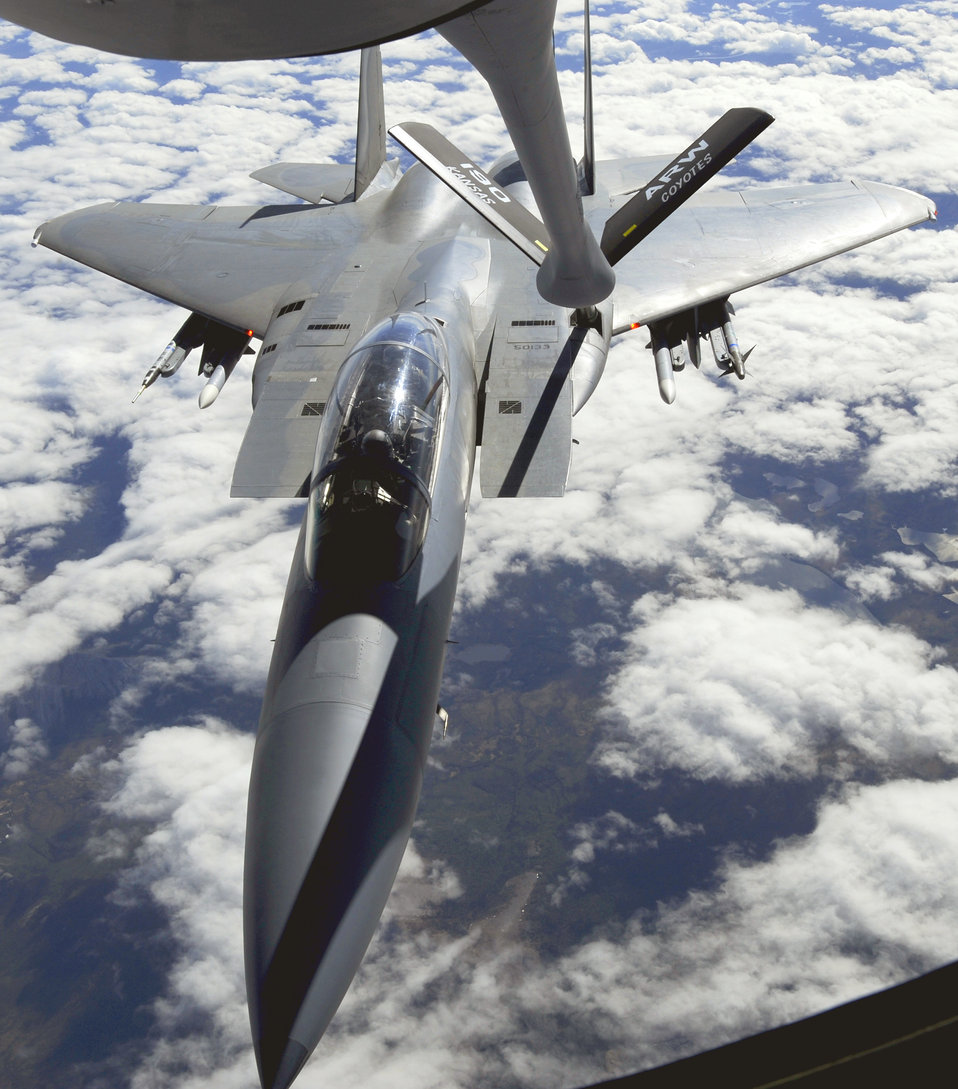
Fighters refuel over Alaska

An F-15 Eagle from Elmendorf Air Force Base, Alaska, receives fuel from a KC-135 Stratotanker from Kansas Air National Guard's 190th Air Refueling Wing. The refueling took place over Alaska May 26, 2010.